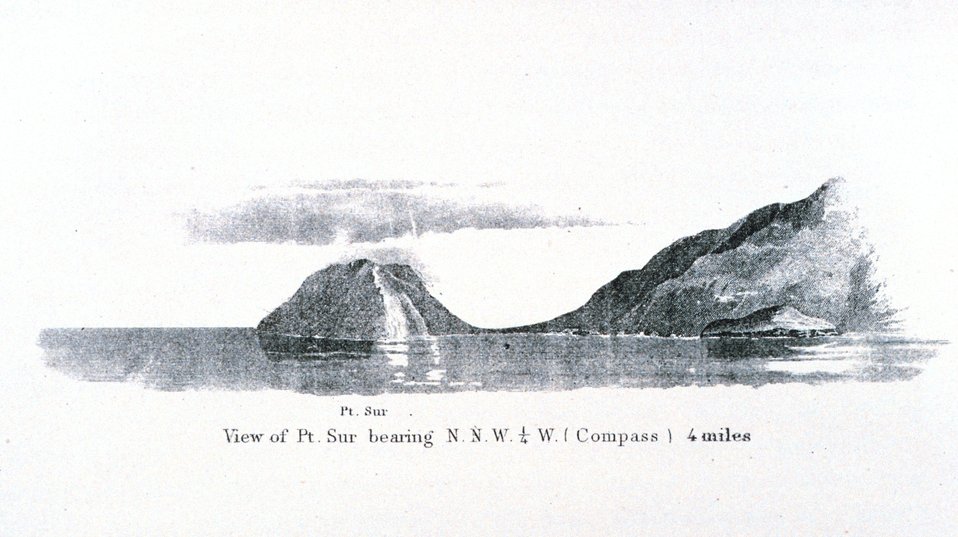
Point Sur along the Big Sur coastline about 25 miles south of Monterey. In: Pacific Coast. Coast Pilot of California, Oregon, and Washington Territory . By George Davidson, 1869. P. 45. Library Call Number VK947.D4 1869.